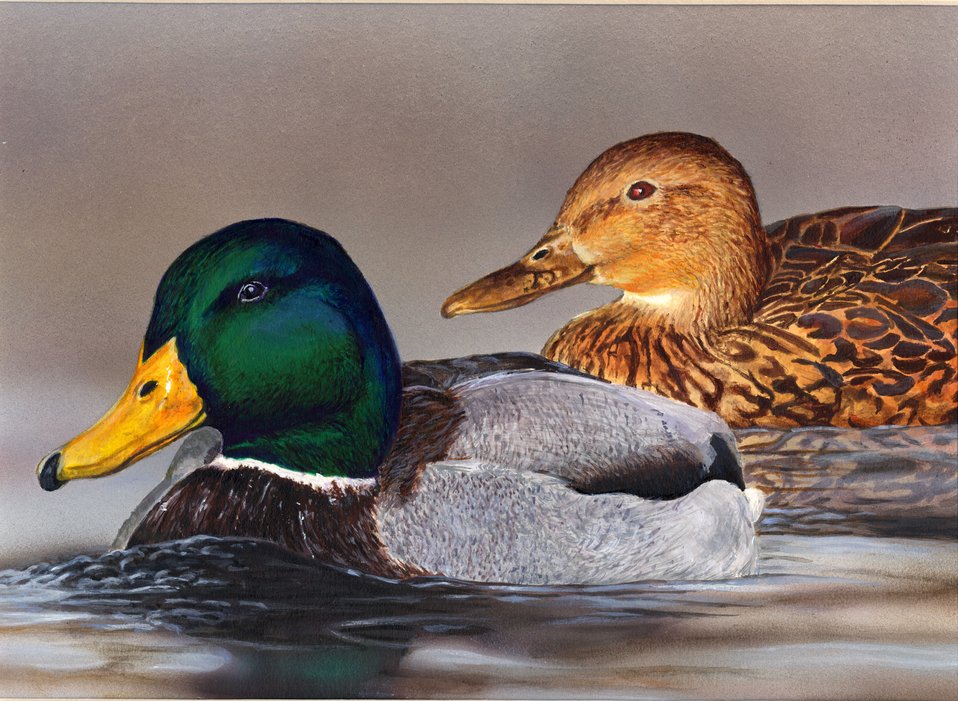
Pennsylvania

2012 Jr Duck Stamp Program
State Best of Show
Pennsylvania